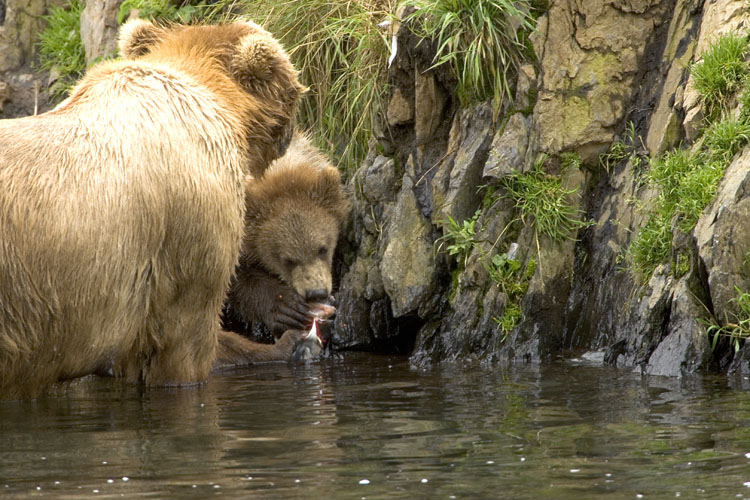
KOD Hildebrand (37)

Kodiak National Wildlife Refuge- Wildlife